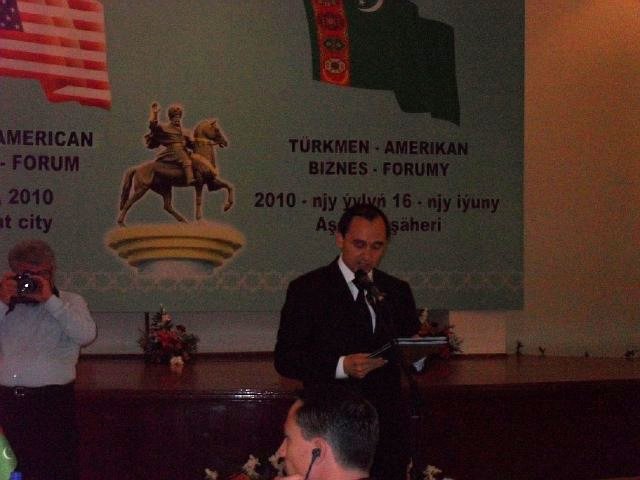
A Diplomat Addresses the First Annual Bilateral Consultations Between Turkmenistan and the United States

A diplomat speaks at the first Annual Bilateral Consultations (ABCs) with the Government of Turkmenistan in Ashgabat on June 16, 2010. The U.S. delegation was led by U.S. Assistant Secretary of State for South and Central Asian Affairs Robert O. Blake, who was accompanied by U.S. Assistant Secretary for Democracy, Human Rights and Labor Michael Posner and Director for Central Asia at the National Security Council, Kurt Donnelly.